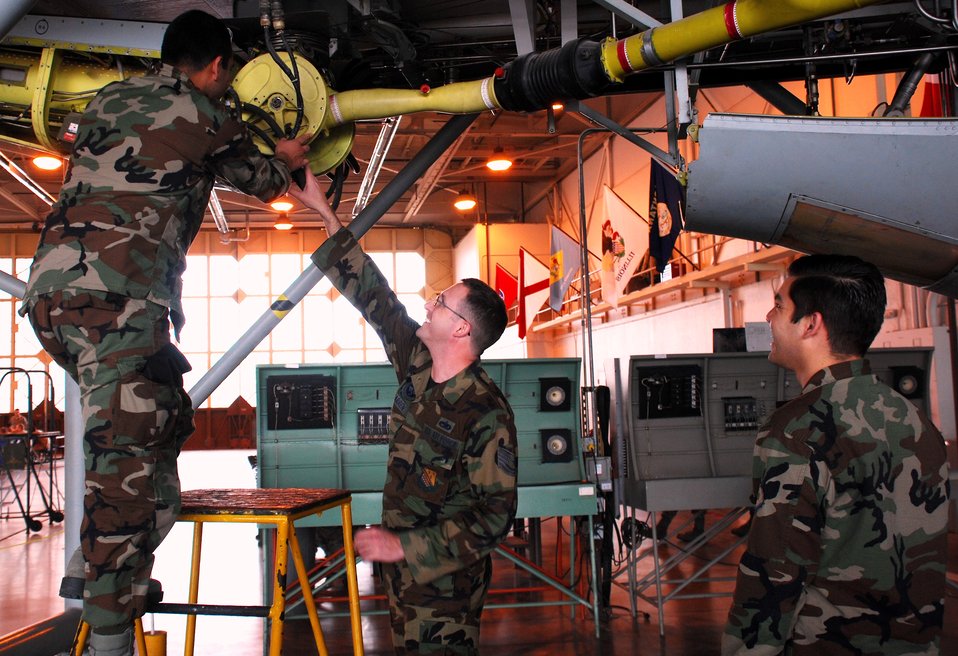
Instructing Chilean air force maintainers

Tech. Sgt. Matthew Warren (center), an instructor at Sheppard Air Force Base, Texas, instructs Chilean air force maintenance students Senior Airmen Oscar Molina and Jorge Hernandez on the maintenance of the KC-135E Feb. 5, 2010. Thirty-eight maintainers from the Chilean air force received 96 hours of instruction before returning home.